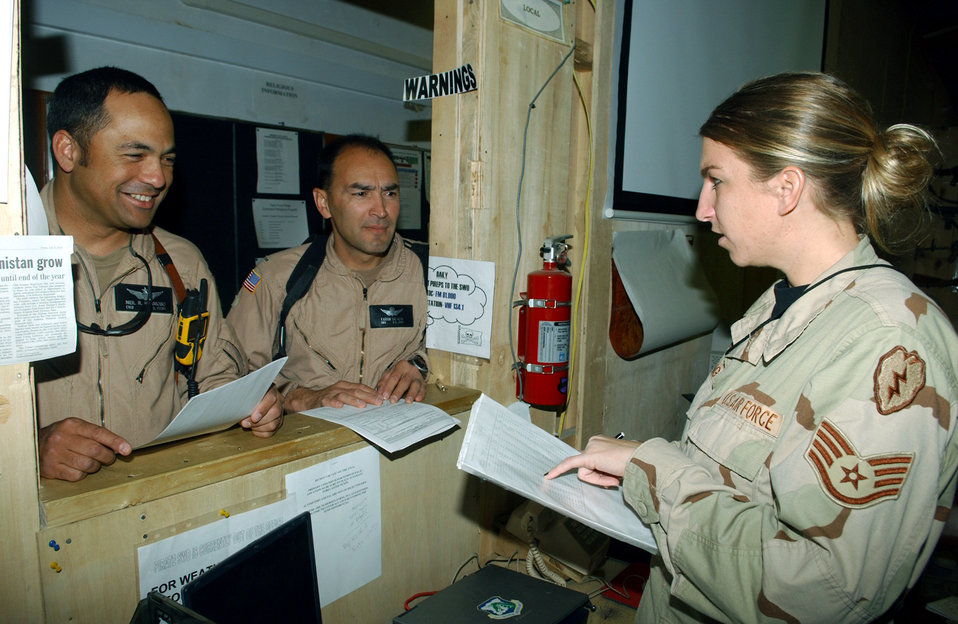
Flight brief

BAGRAM AIR BASE, Afghanistan -- Staff Sgt. Alison Long (right) briefs Army Chief Warrant Officer Neil Hermoso (left), a CH-47 Chinook pilot, and Chief Warrant Officer Fabian Salazar, an AH-64 Apache pilot, on weather conditions before a mission. Sergeant Long is a weather forecaster for the 25th Infantry Division (Light).